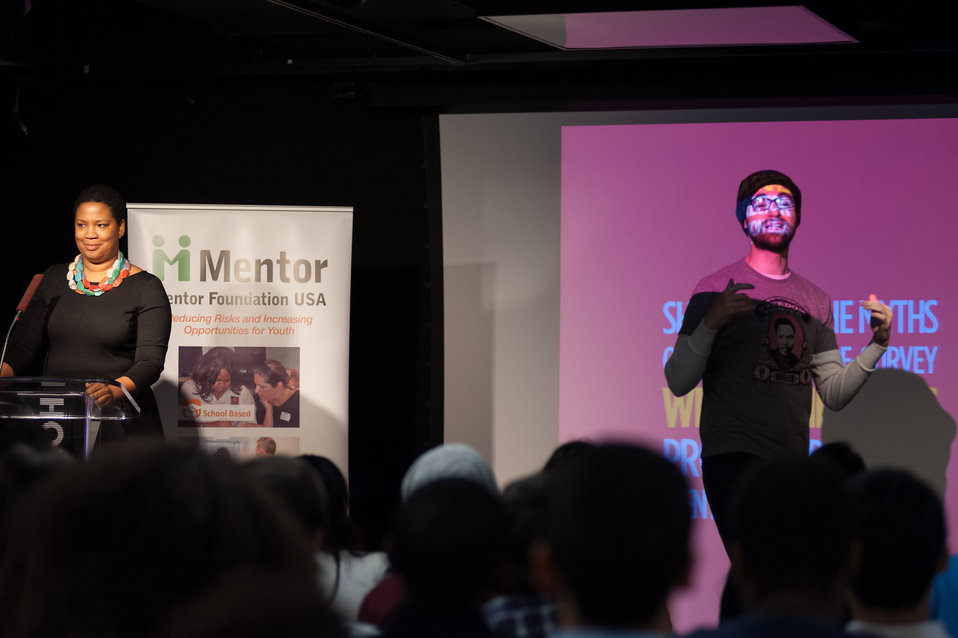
Mentor NDFW Event 2014

Mentor Foundation USA, in partnership with the National Institute on Drug Abuse (NIDA) and other key partners hosted a Youth Drug Facts Rally at the House of Sweden on Thursday, 30th January 2014. Approximately 200 students from five local high schools attended and had the opportunity to interact with top U.S. scientific experts, and inspiring guest speakers to “shatter the myths” about drugs and substance abuse, while pledging to stay drug-free.